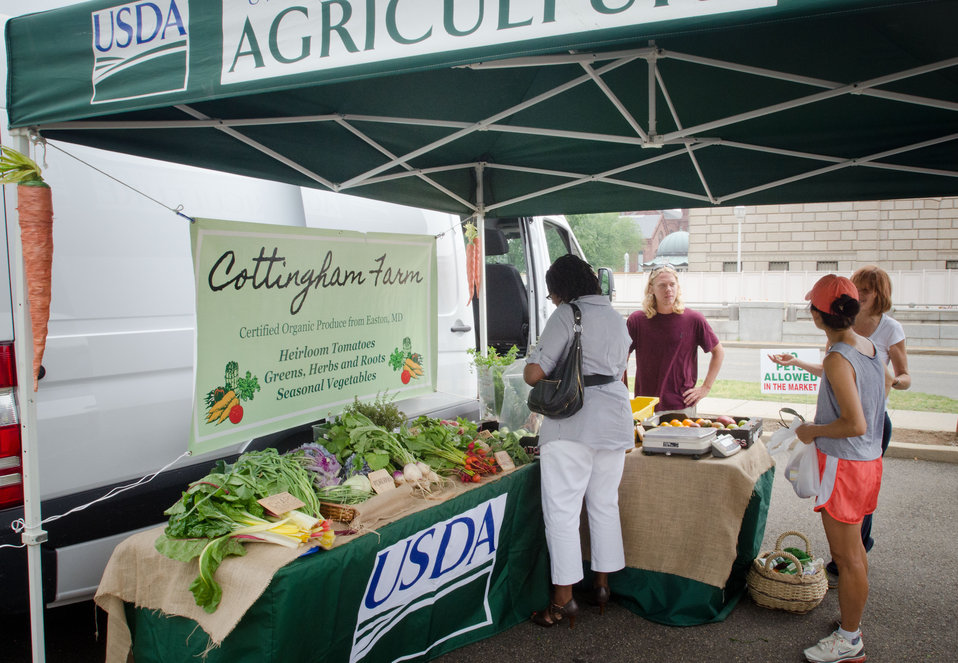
Cottingham Farm's Shane Shewbridge talks with customers during the U.S. Department of Agriculture (USDA) summer farmers market opening of its 17th season at the USDA Whitten Building east parking lot in Washington, D.C., on Friday, May 31, 2012. This year's theme is Grow, Healthy, Eat Healthy & Be Healthy. USDA and Fuel Up to Play 60, in partnership with the National Dairy Council and the National Football League, invited residence, visitors and local school children to participate in opening day activities. Hip Hop Public Health featuring Easy A.D. from Cold Crush Brothers and disk jockey Artie Green play music and invite people to get up on stage to dance or hula hoop to get active. D.C. Truck Farm help people know from what plants, that certain herbs, fruit and produce come from by giving tail-gate tours of the garden growing in the bed of their pickup truck. The Peoples Garden Initiative and USDA Executive Master Gardeners gave away a variety of fruit and produce seedlings to include the Tomato ‘Abraham Lincoln’ in celebration of the USDA 150th Anniversary and to share their harvest. New features for 2012 include an on-site sign language interpreter, a hand washing station, and a USDA-certified organic vendor. Other products selling today are fresh fruits, vegetables, herbs, baked goods, meats, kettle popcorn, local honey, hand-made soap and more.